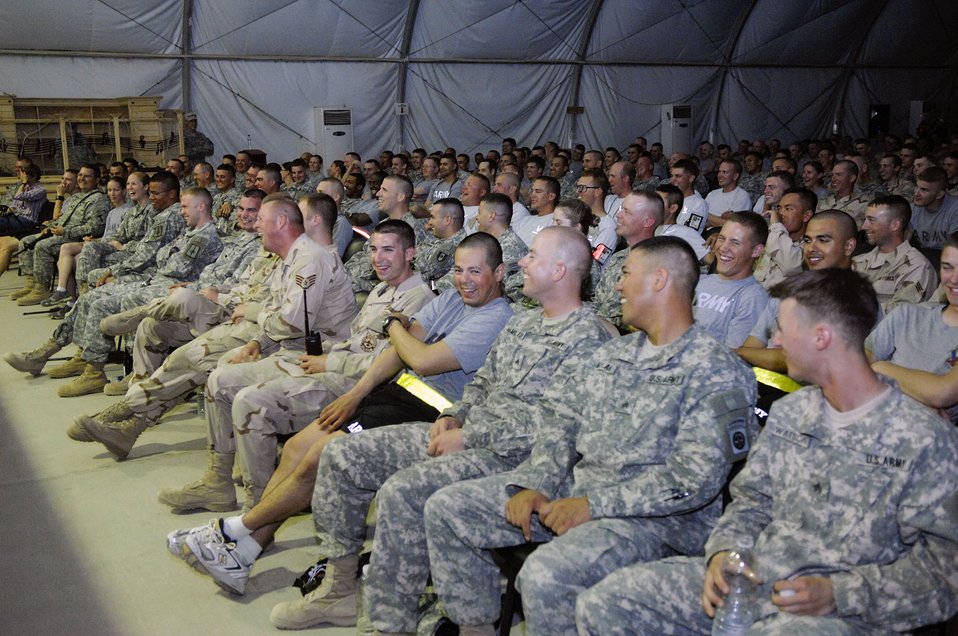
USO-sponsored show keeps 'em laughing

More than 700 Soldiers and Airman enjoy Scott Kennedy's comedy routine during a USO show at Camp Adder, Iraq. He is touring with Dave Attell of Comedy Central's